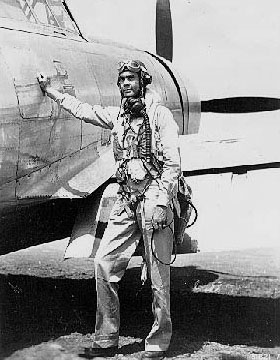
Col. Benjamin O. Davis Jr., commander of the 332nd Fighter Group, in front of his P-47 Thunderbolt in Sicily.